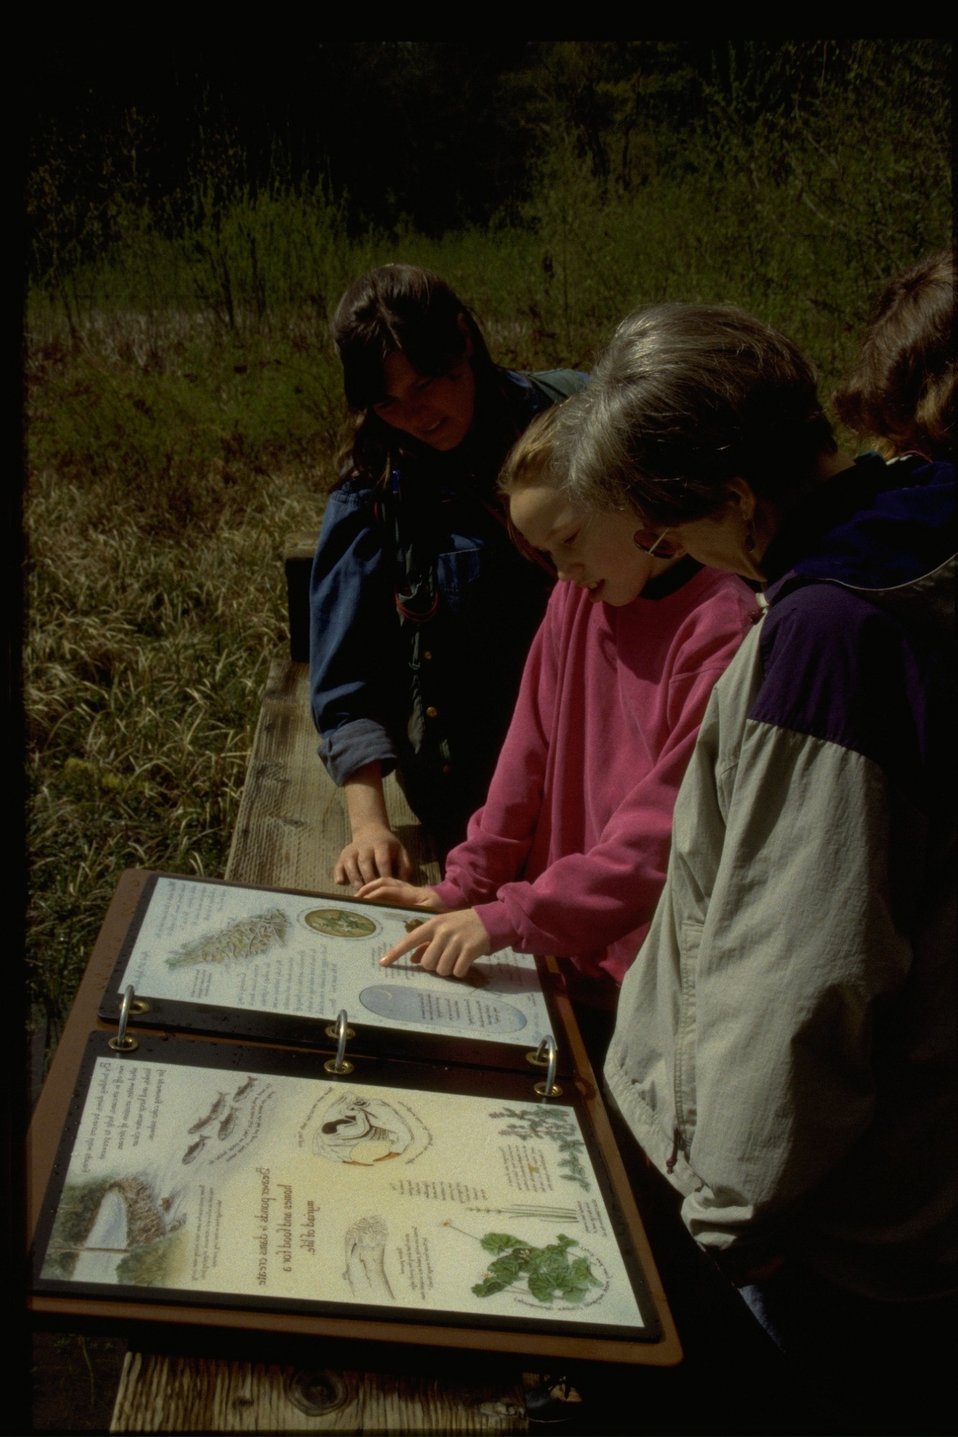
Interpretive Panels: Boardwalk Trail Journals.